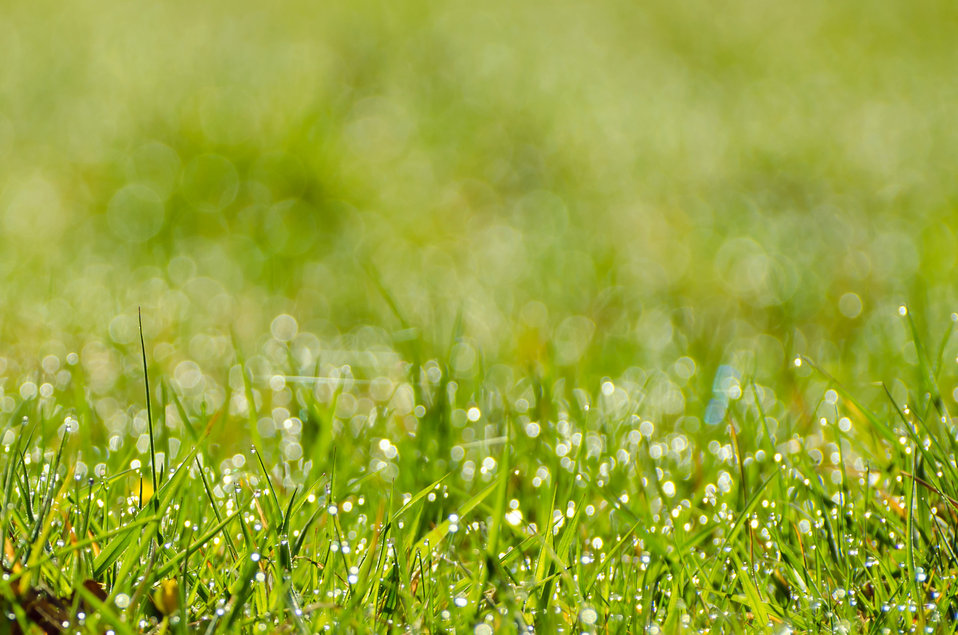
Grass - background.